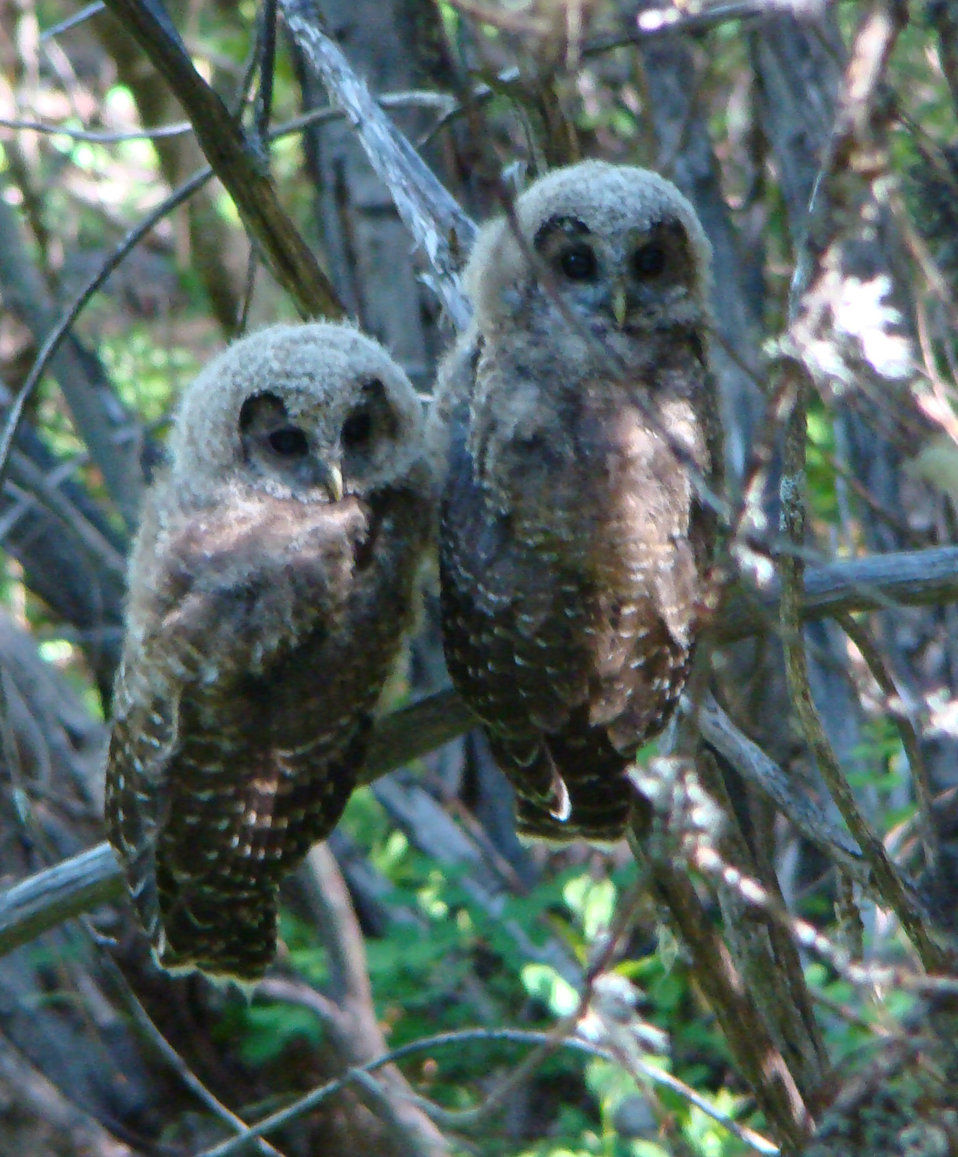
Fledgling Northern Spotted Owls

Northern Spotted Owl pair on the Klamath National Forest, Goosenest Ranger District, located in Siskiyou County, California